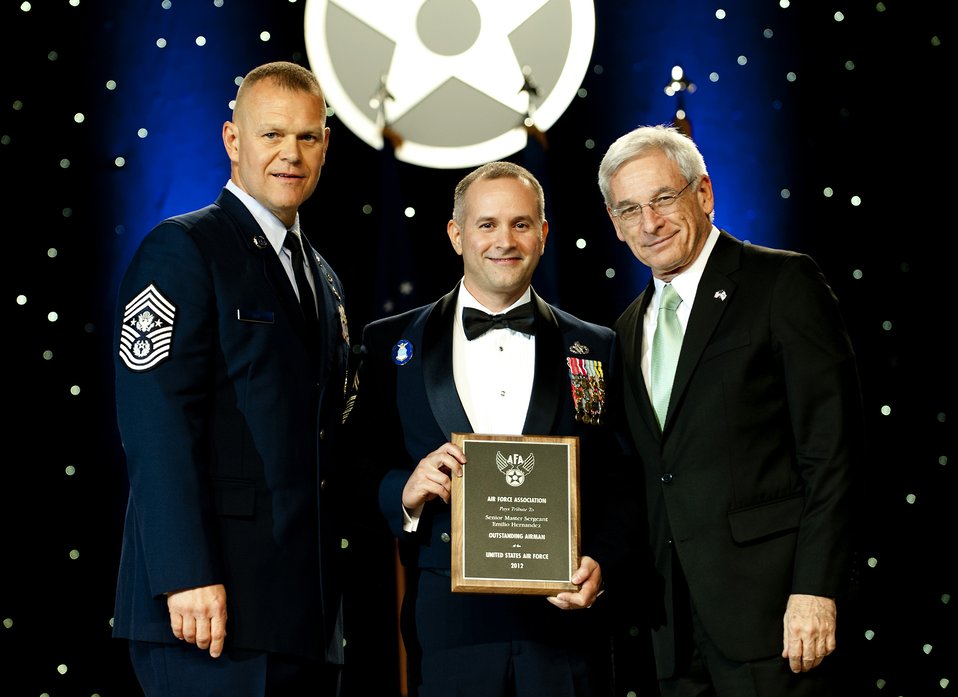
12 Outstanding Airmen of the Year

Chief Master Sgt. of the Air Force James Roy, left, and Sandy Schlitt, right, Air Force Association's chairman of the board, present a plaque to Senior Master Sgt. Emilio Hernandez during the 12 Outstanding Airmen of the Year reception and awards dinner in Washington, D.C., Sept. 17, 2012. The recipients were recognized for superior leadership, job performance, community involvement and personal achievements. Hernandez is with the 100th Civil Engineer Squadron from Royal Air Force Mildenhall, England.